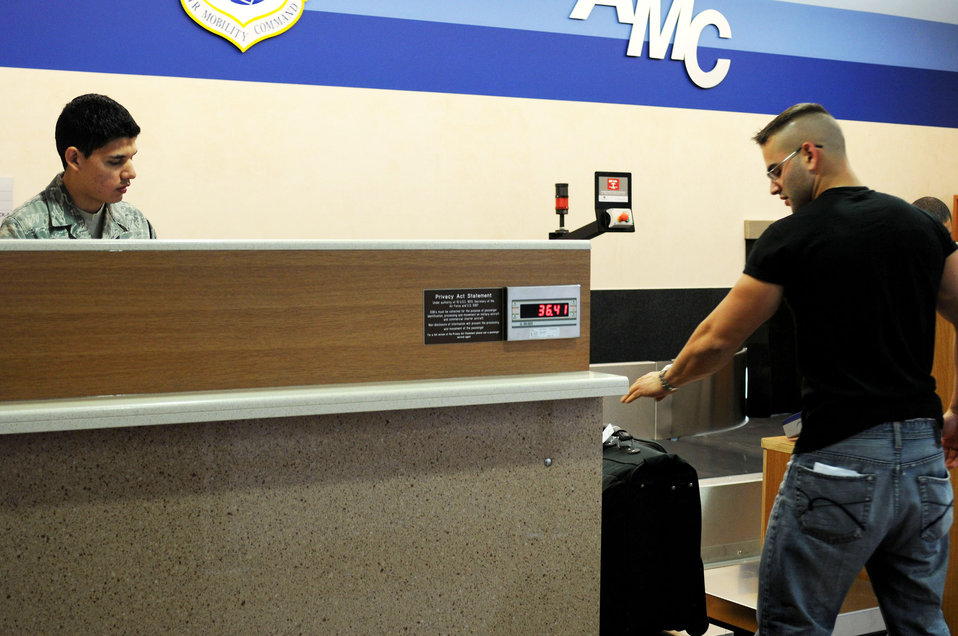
Aviano Airmen open doors to new NATO terminal

Airman 1st Class Benito Rodriguez checks-in Senior Airman David Anthony for his flight back to the U.S. at the new passenger and air freight terminal Sept. 11, 2009, at Aviano Air Base, Italy. Airman Rodriguez is a 724th Air Mobility Squadron passenger service agent.